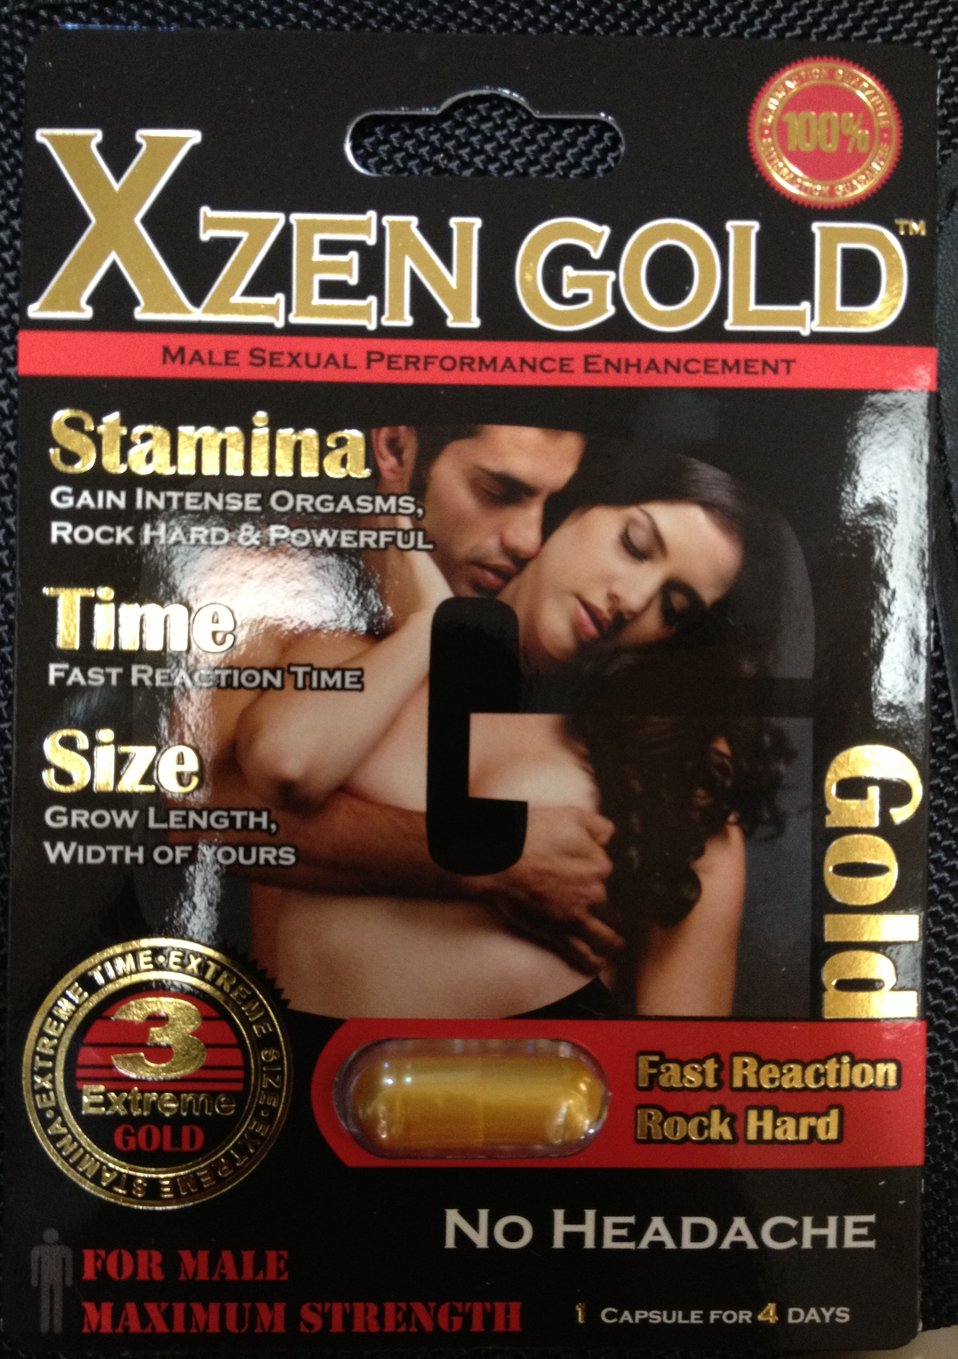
Xzen Gold

September 24, 2013 - The FDA is advising consumers not to purchase or use 'Xzen Xpress,' a product promoted and sold for sexual enhancement. The product was found to contain undeclared sildenafil and tadalafil. For more information, go to www.fda.gov/drugs/resourcesforyou/consumers/buyingusingme...

And read this Consumer Update: Beware of Fraudulent ‘Dietary Supplements’